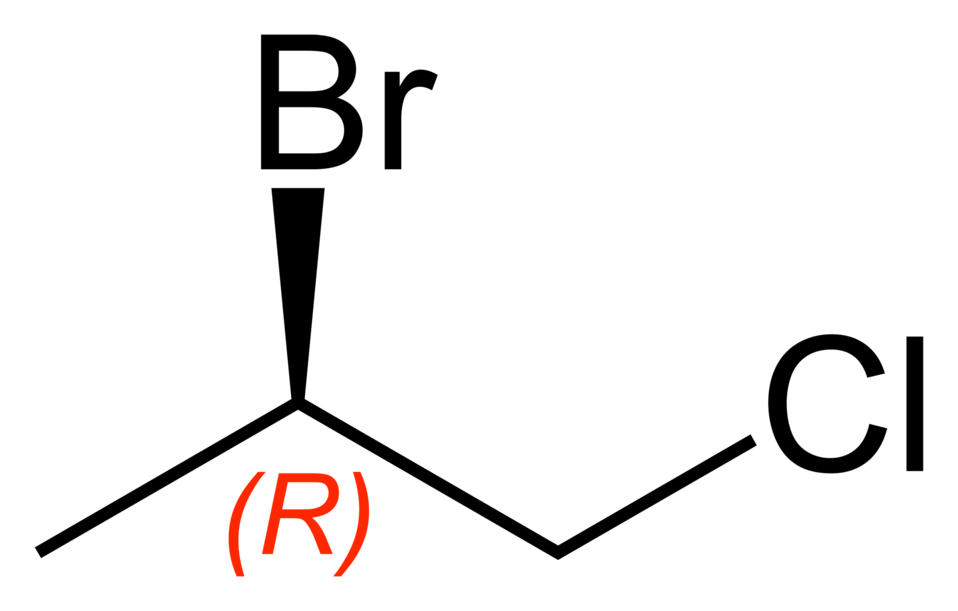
Skeletal formula of the R enantiomer of the 2-bromo-1-chloropropane molecule, C3H6BrCl.